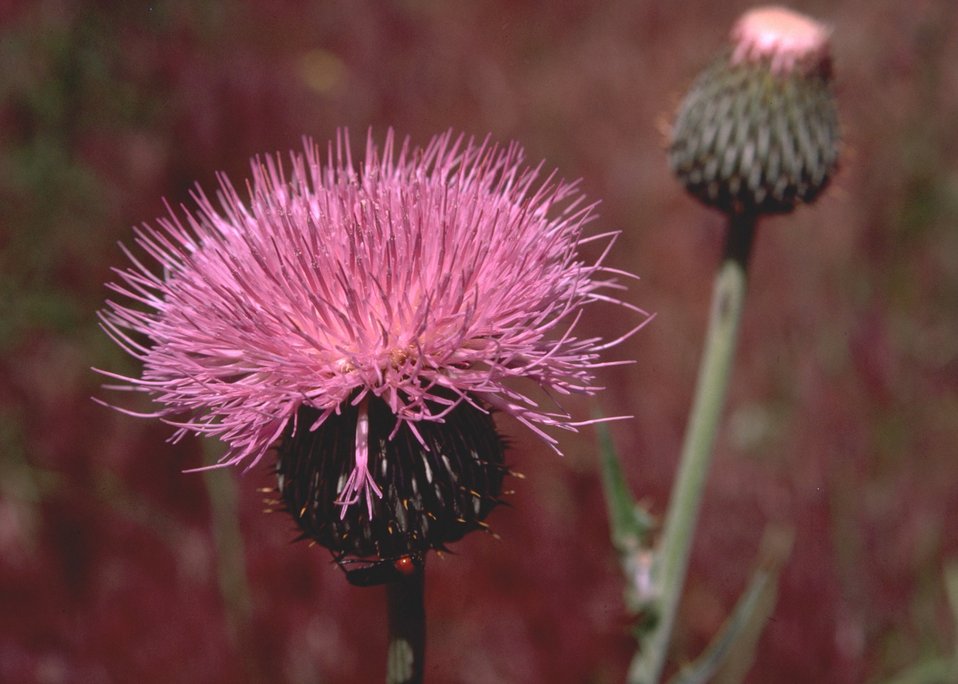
Musk thistle is a biennial weed that reproduces only from seed.